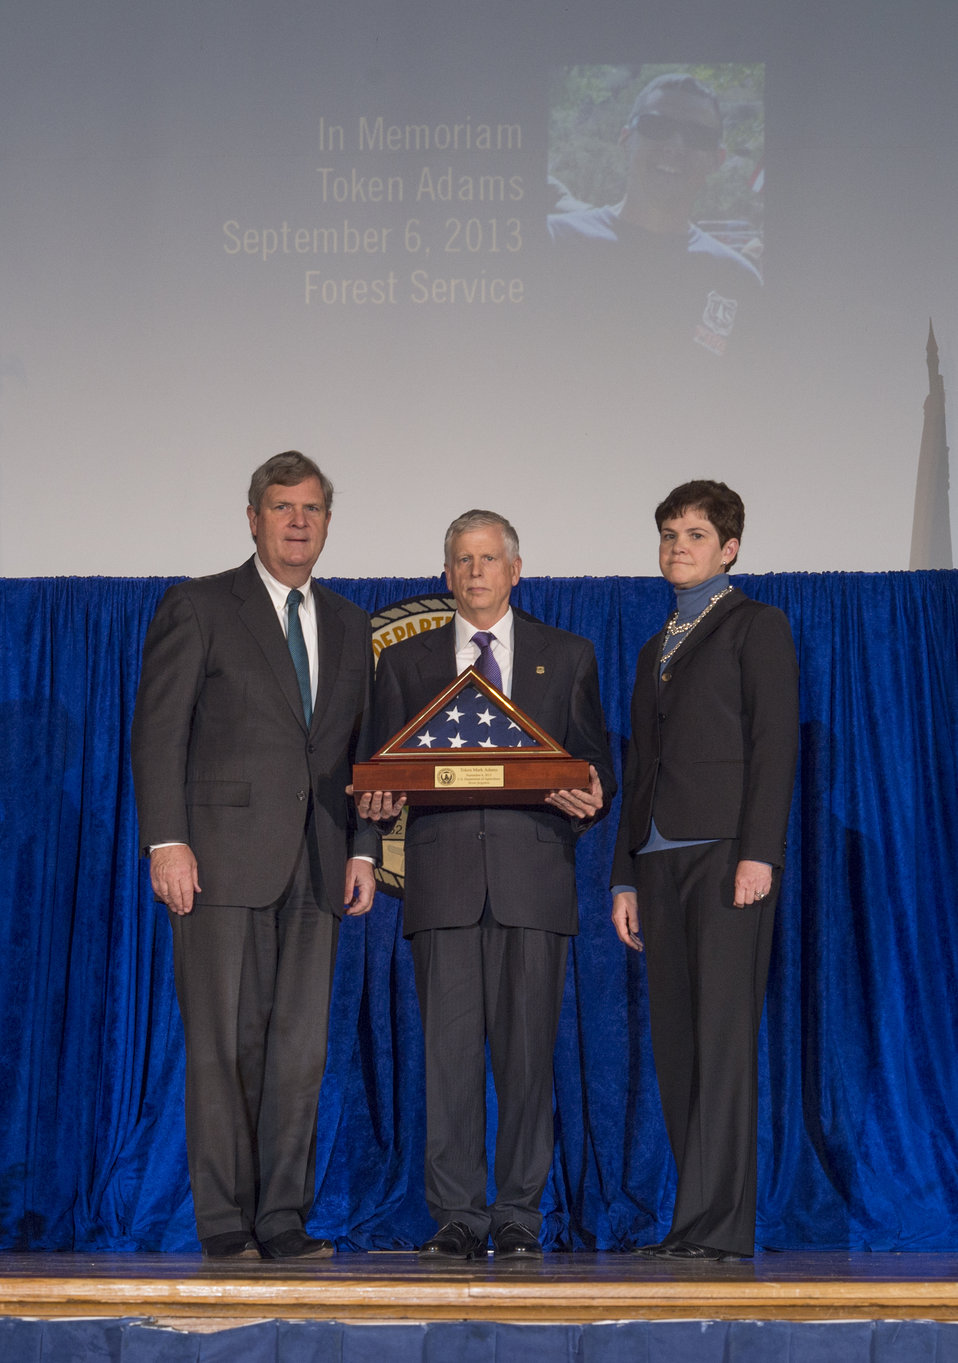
Agriculture Secretary Tom Vilsack and Agriculture Deputy Secretary Krysta Harden present a flag in memory of Token Adams to U.S. Forest Service Chief Tidwell for Adam’s service and sacrifice in the performance of his duty while supporting the U.S. Department of Agriculture’s (USDA) mission at the 2013 Secretary’s Honor Awards in the Jefferson Auditorium at the U.S. Department of Agriculture (USDA) in Washington, D.C. on Wednesday, Dec. 11, 2013. On Friday, Sep. 6, 2013, Token Adams lost his life while scouting a fire on the Santa Fe National Forest near Jemez Springs, NM. Token was 41 years old and served as an engine captain on Santa Fe National Forest’s Jemez Ranger District. He had been a hotshot firefighter for 10 years prior to his time on the Santa Fe and a veteran of the U.S. Navy.